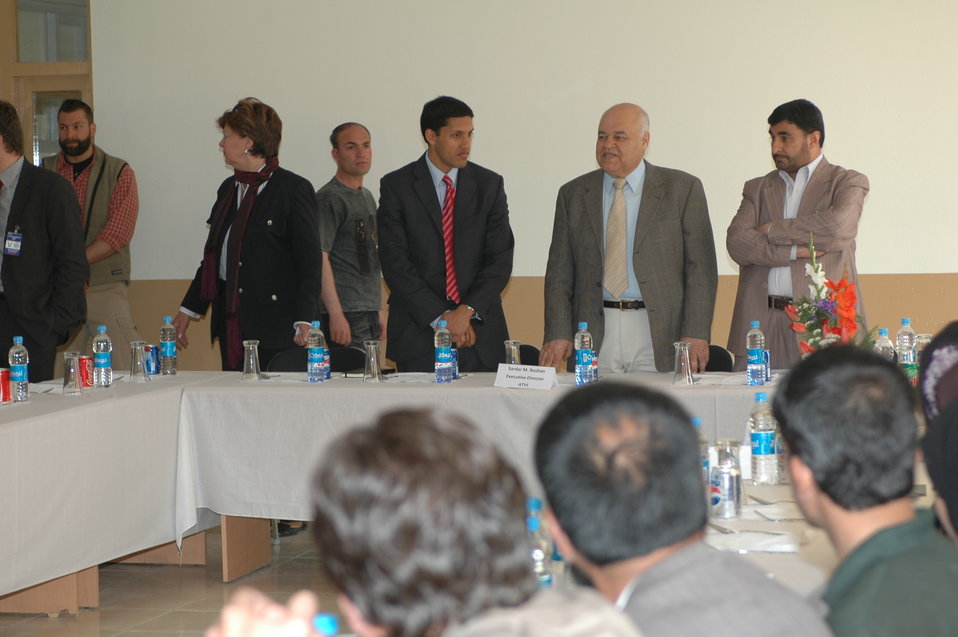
Dr Shah Visits Votech in Kabul